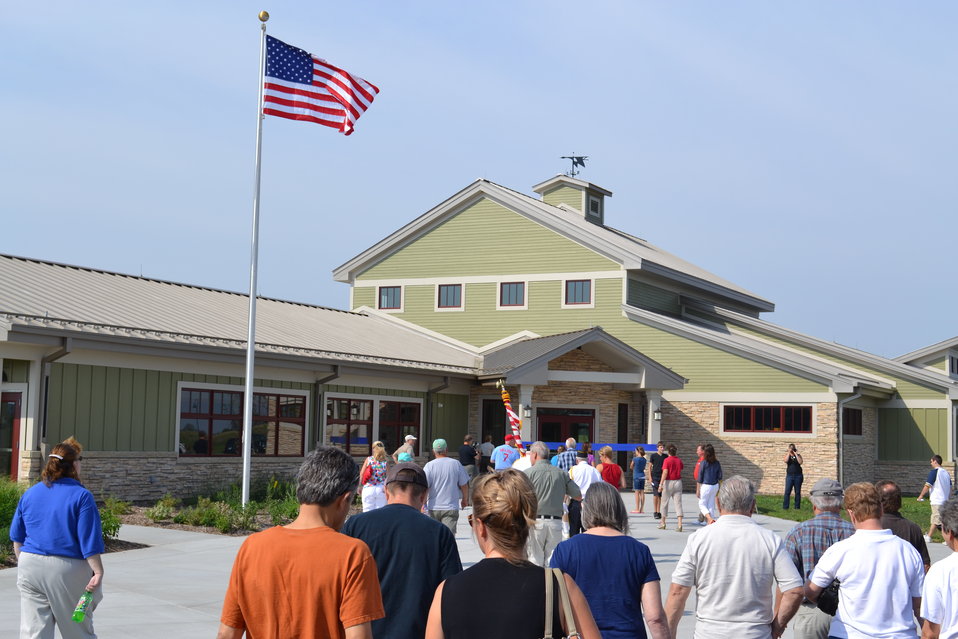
New visitor center

Visitors walk toward the visitor center for ribbon cutting.